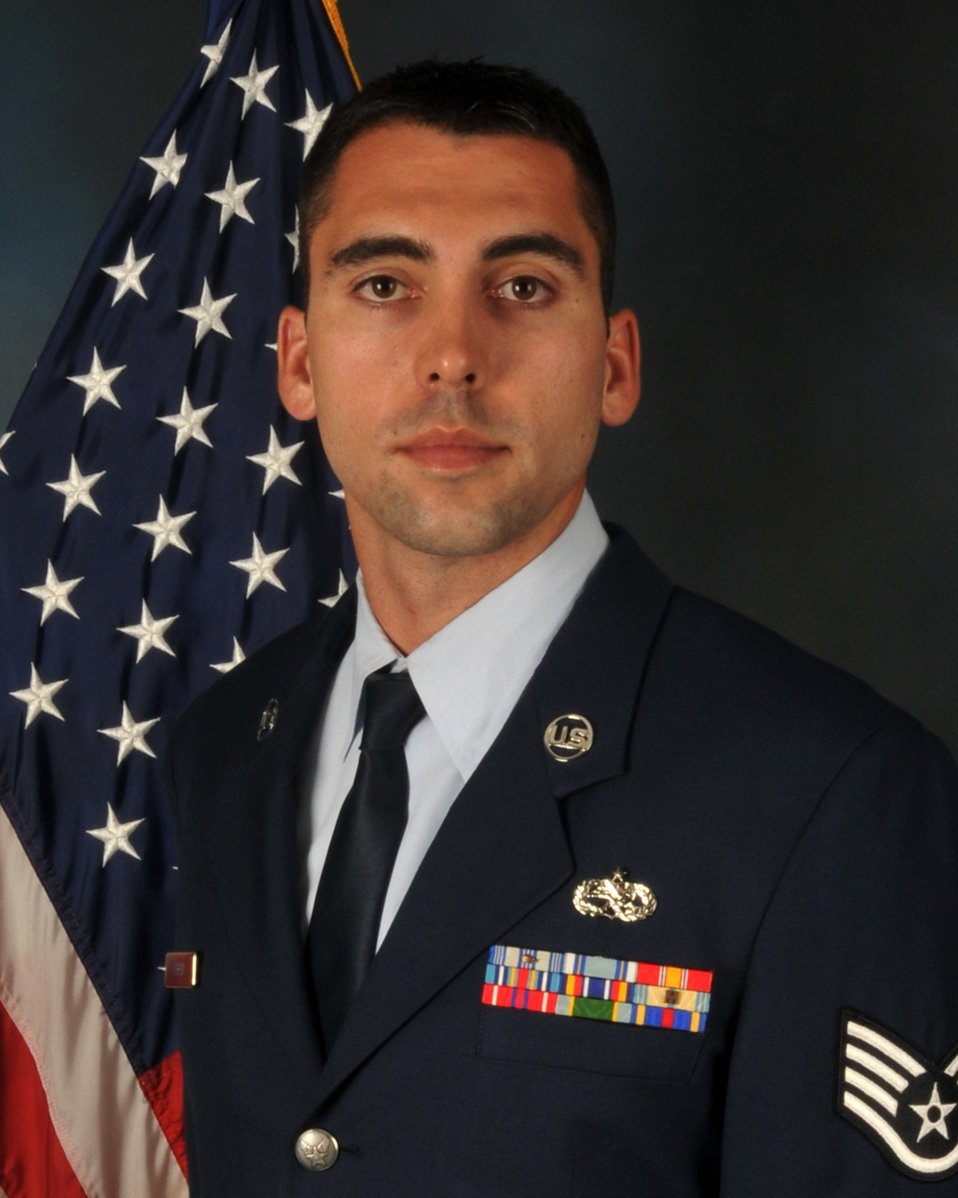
Staff Sgt. Mitchell Corbin was traveling on the Sam Houston Parkway in Texas when he heard a woman screaming someone was in a wrecked, burning car June 1, 2012. Corbin reacted and pulled Nancy Decker from the blazing vehicle. Corbin is an aerospace ground equipment technician with the Texas Air National Guard’s 147th Reconnaissance Wing